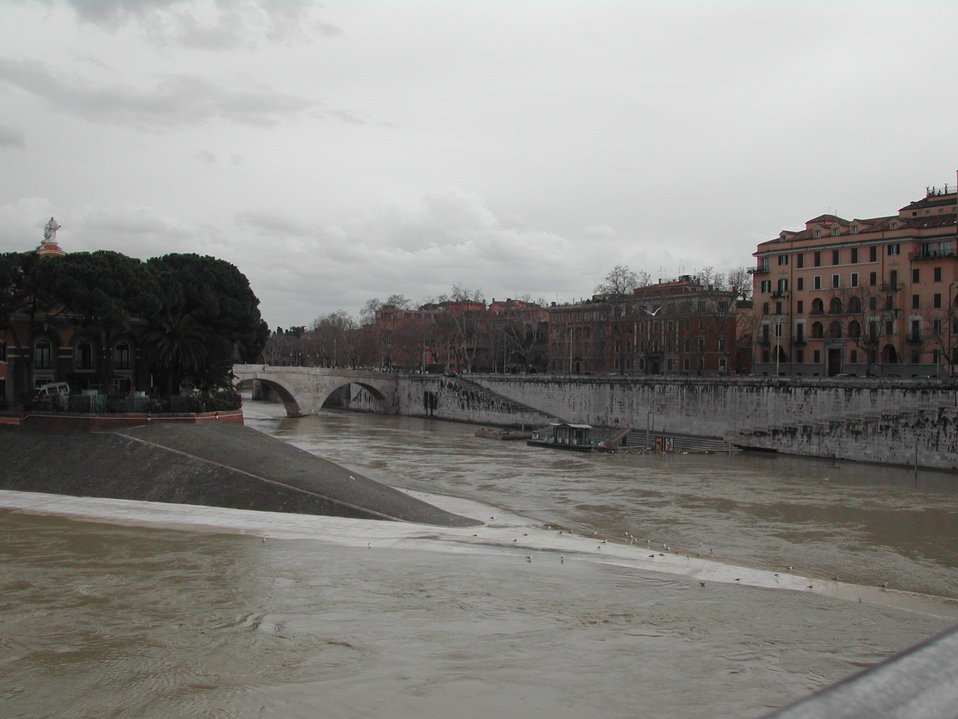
0403 - Tevere in piena 01